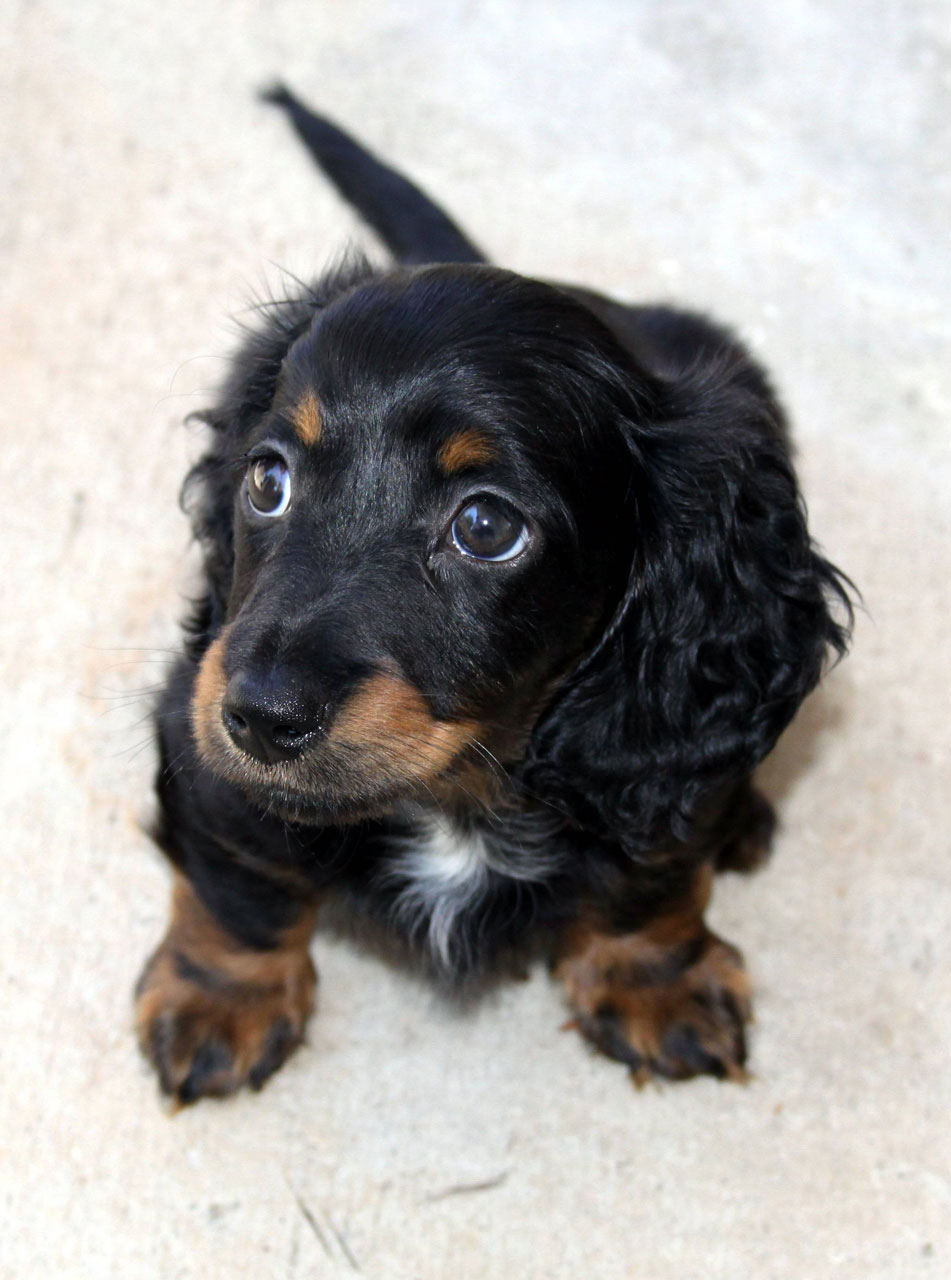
Mini longhair dachshund puppy.